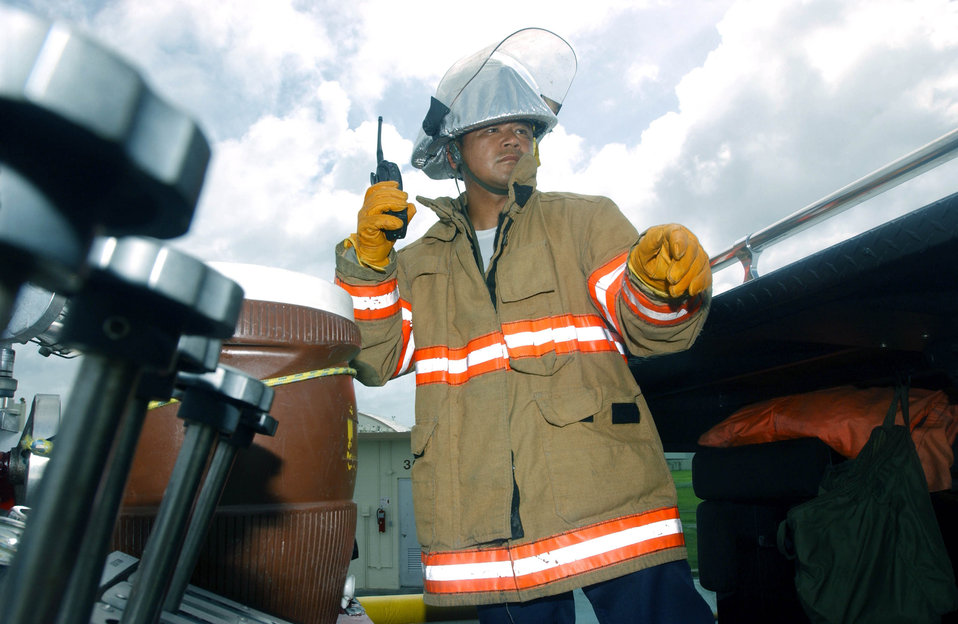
Fighting fires

KADENA AIR BASE, Japan -- Oshiro Morrihiko surveys the scene of a simulated building fire during the 18th Wing's operational readiness exercise here Aug. 22. Mr. Morrihiko is a firefighter assigned to the 18th Civil Engineer Squadron.